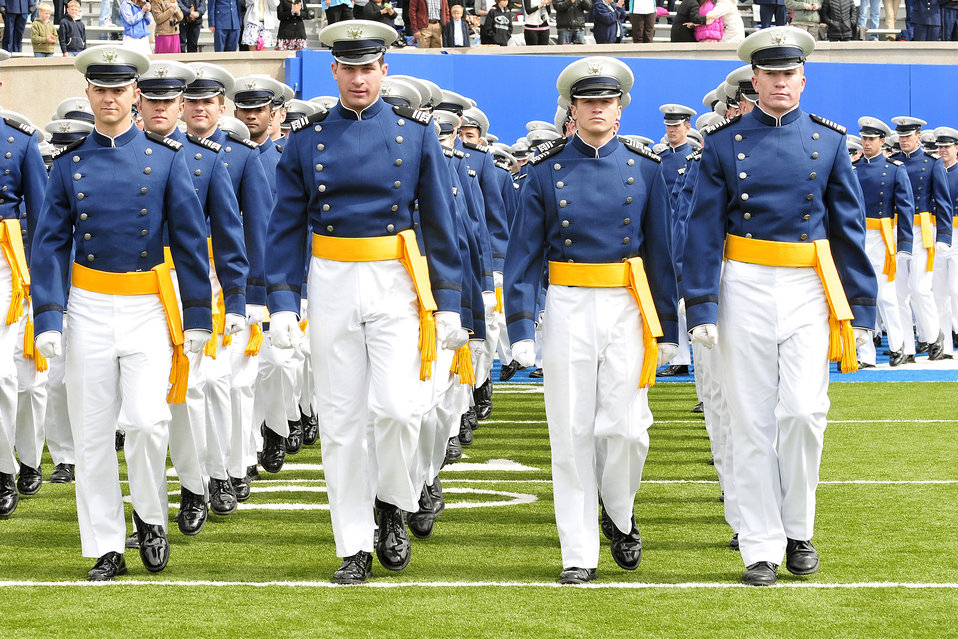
Academy class of 2011

The Air Force Academy's Class of 2011 marches into Falcon Stadium May 25, 2011, during commencement ceremonies in Colorado Springs, Colo.